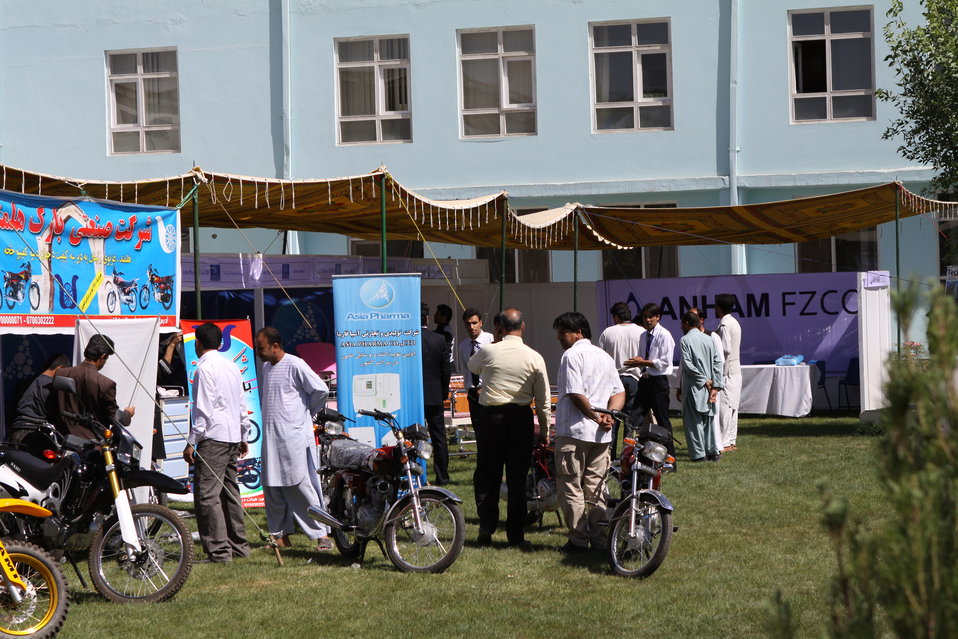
100522 ATVI Graduation 018